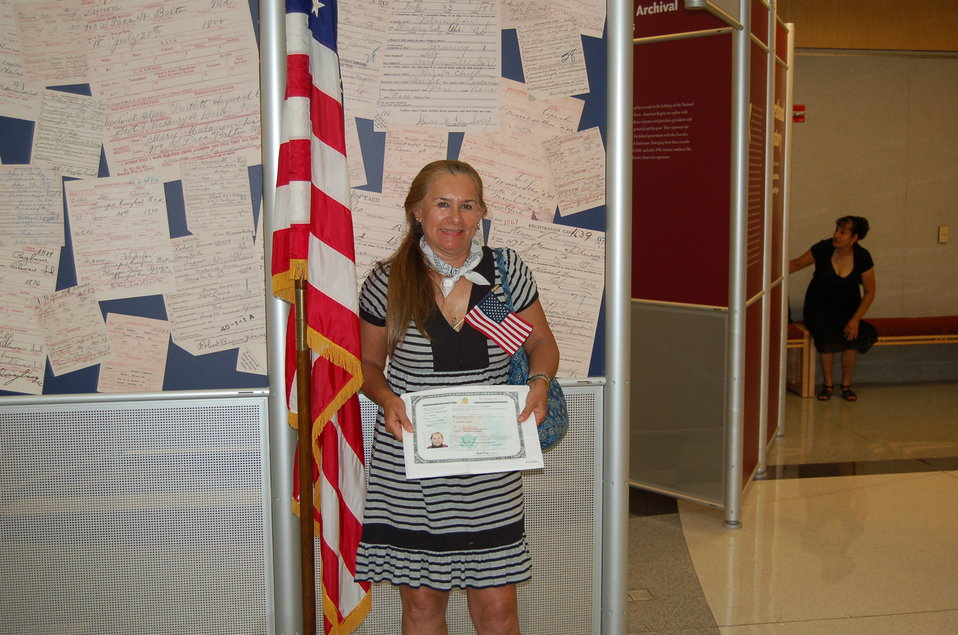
New Citizens